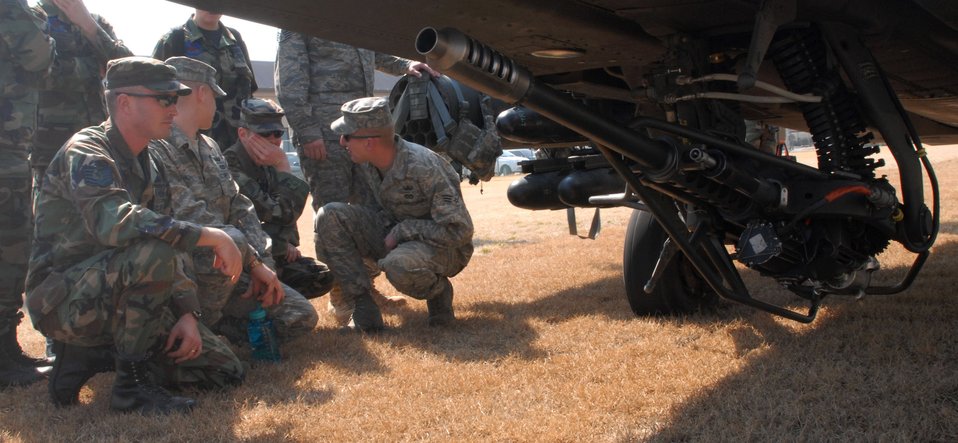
Army shows off Apache at Kunsan

Explosive ordnance disposal Airmen from the 8th Civil Engineer Squadron at Kunsan Air Base, South Korea, check one of the weapons on an AH64D Apache helicopter during a static display of the aircraft March 10. Army aviators brought the helicopter to Kunsan to inform Airmen about the aircraft and the Army's current mission in South Korea. The helicopter belongs to Charlie Company, 42nd Aviation Battalion, at Camp Humphreys